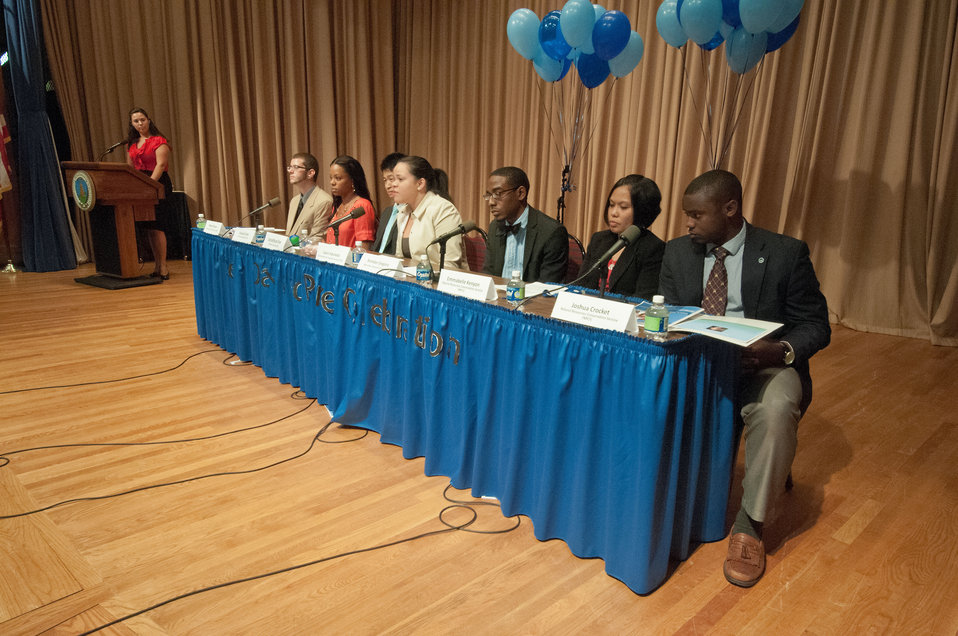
Mistress of Ceremonies Cynthia Cuellar, Program Liaison Specialist, Office of the Executive Secretary moderated a panel of current and past interns at the United States Department of Agriculture Intern Day and Panel Discussion, “Transforming USDA’S Tomorrow Today” in Washington, D.C., on Wednesday, July 11, 2012. From left: Robert Bruton, Danielle Collier, Jonathan Kim, Laura Sepulveda, Brendan Gregorie, Emmabelle Kenyon and Joshua Crockett Cuellar interned at USDA with the Office of Faith Based and Neighborhood Partnerships.